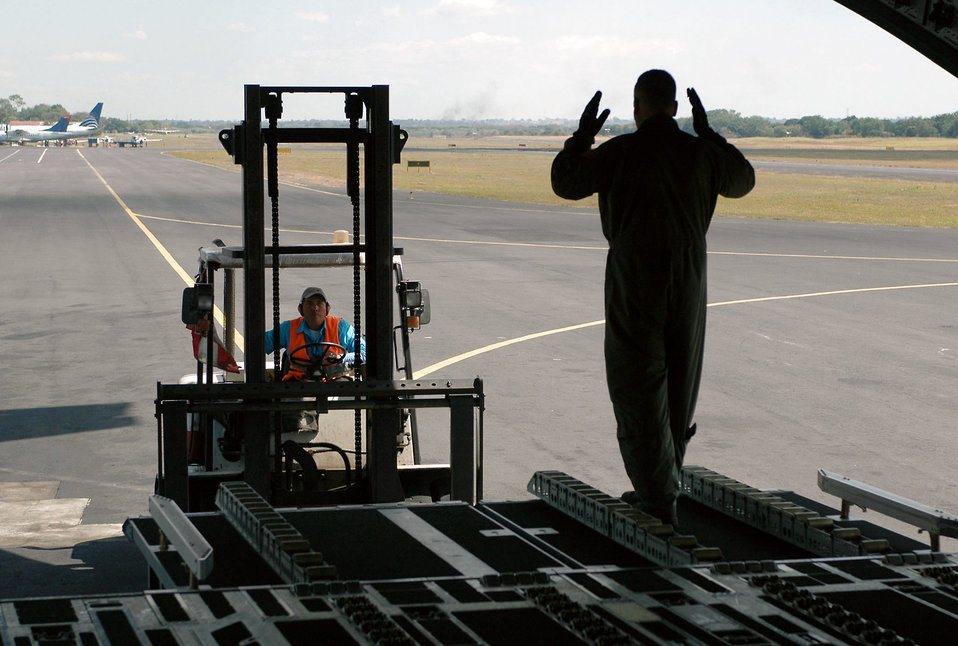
Dover aircrew delivers humanitarian supplies to Nicaragua

Master Sgt. Mike Wright aligns the forklift driver to unload cargo from a C-17 Globemaster III Jan. 18 at the Managua International Airport, Nicarauga. Approximately 18,000 pounds of cargo consisting of desks, chairs, file cabinets and books were delivered for use at a Nicaraugan university library. Sergeant Wright is a loadmaster with the Air Force Reserve's 326th Airlift Squadron at Dover Air Force Base, Del.